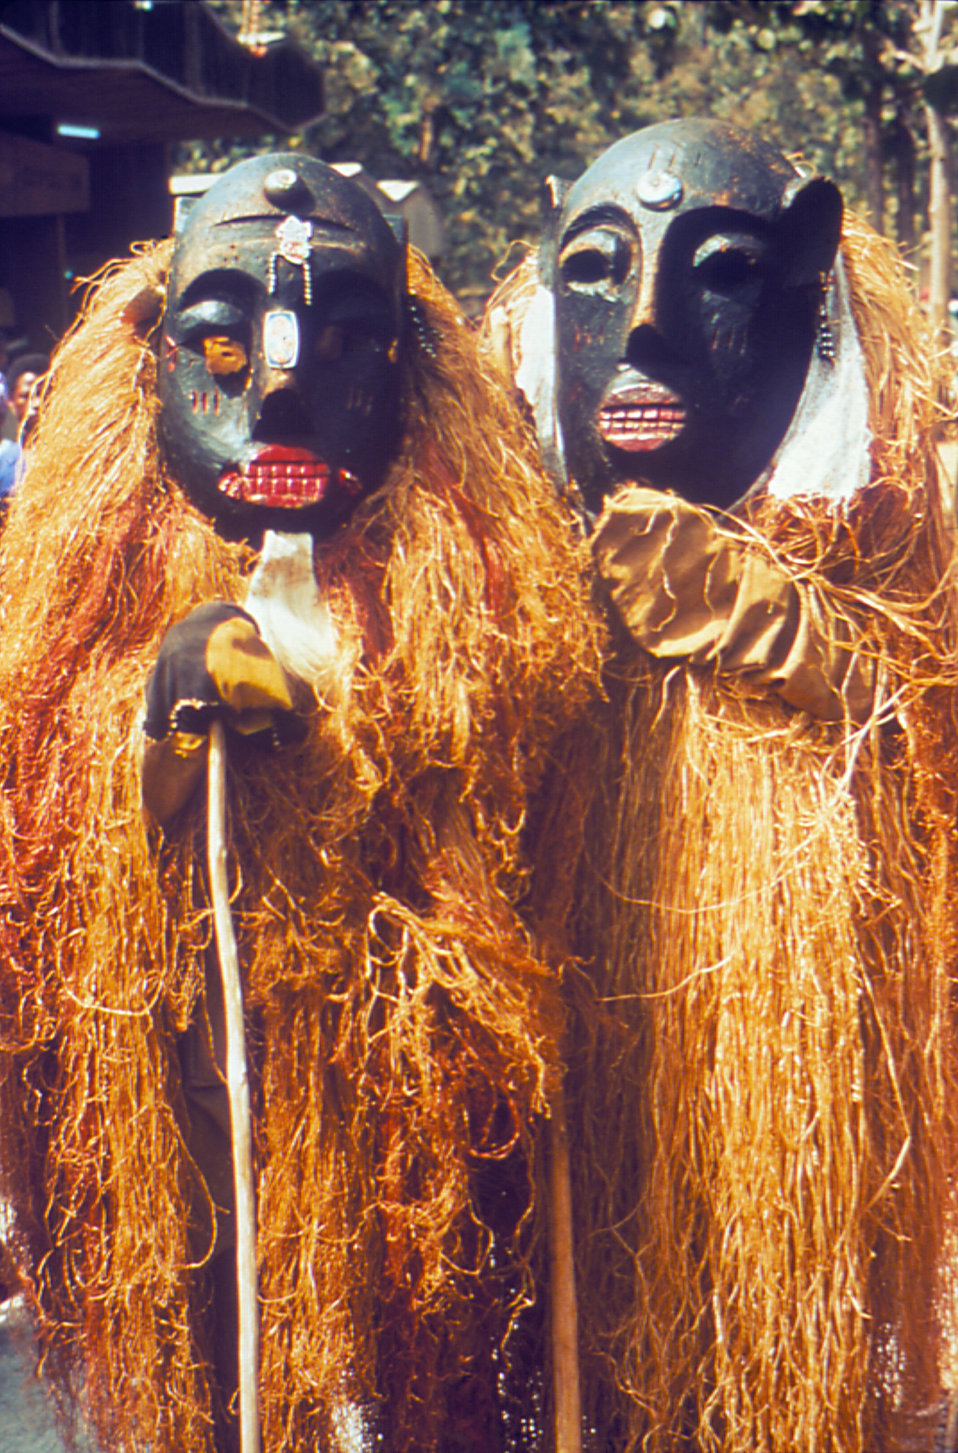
Witch Doctors